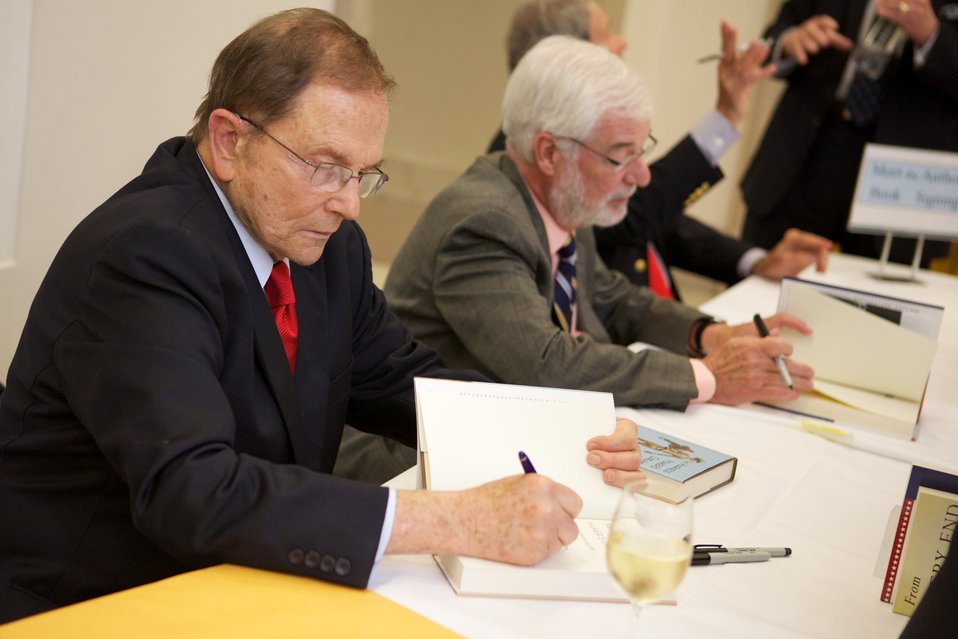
A Nation of Immigrants: How They Shaped America